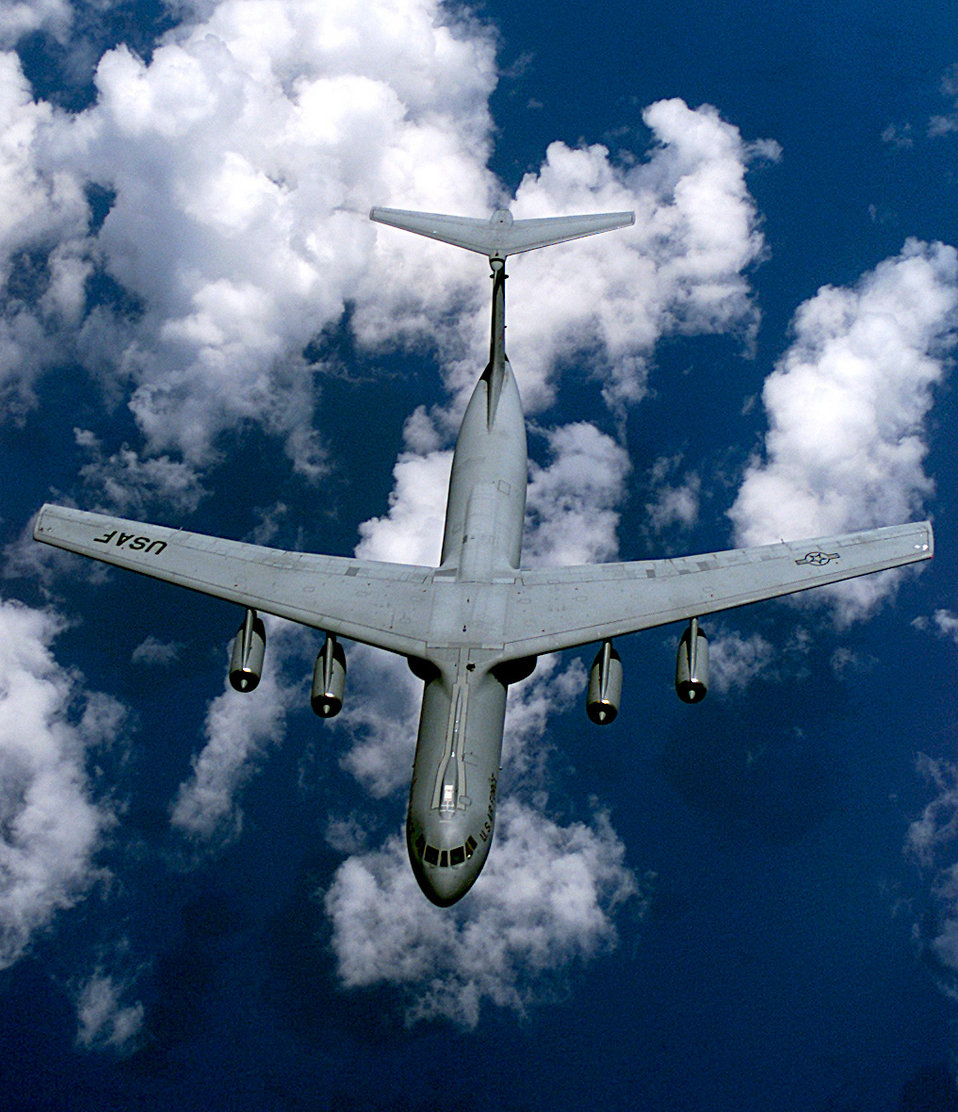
Rodeo 2000

NORTH CAROLINA -- A C-141 Starlifter from 445th Airlift Reserve Wing, Wright-Patterson Air Force Base, Ohio, completes an air refueling mission over the North Carolina coastline for Air Mobility Rodeo 2000. During Rodeo 2000, teams from all over the world will compete in areas including airdrop, aerial refueling, aircraft navigation, special tactics, short field landings, cargo loading, engine running on/offloads, aeromedical evacuations and security forces operations.